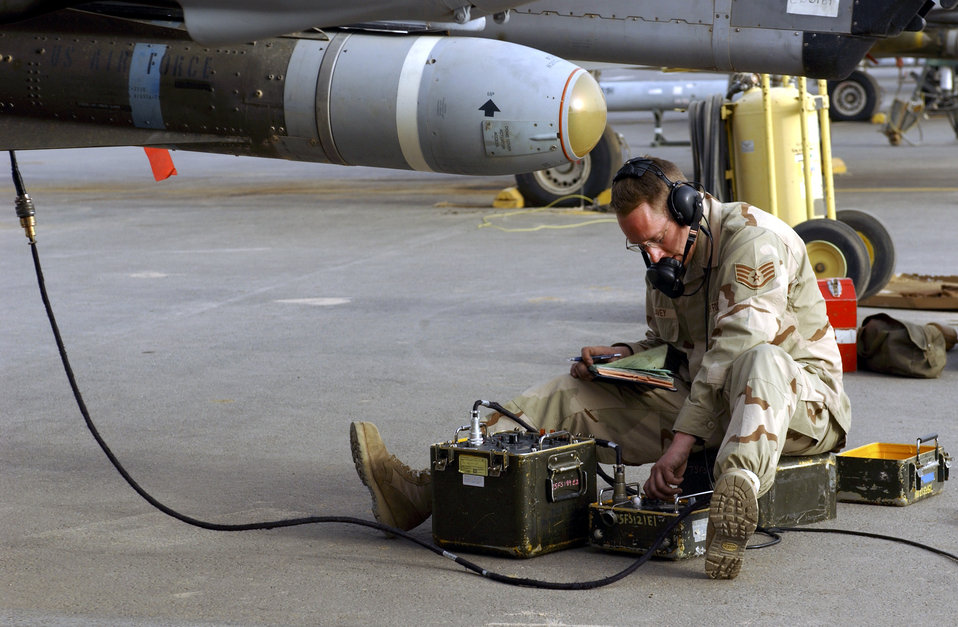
Fly-by-wire

OPERATION IRAQI FREEDOM -- Staff Sgt. Michael Davey, Guidance and Control Specialist at 332nd Air Expeditionary Wing, wire-tests an A-10 Thunderbolt II, March 29, 2003. The purpose for the testing is to ensure the aircraft functions properly for missions at a forward-deployed location in support of Operation Iraqi Freedom.